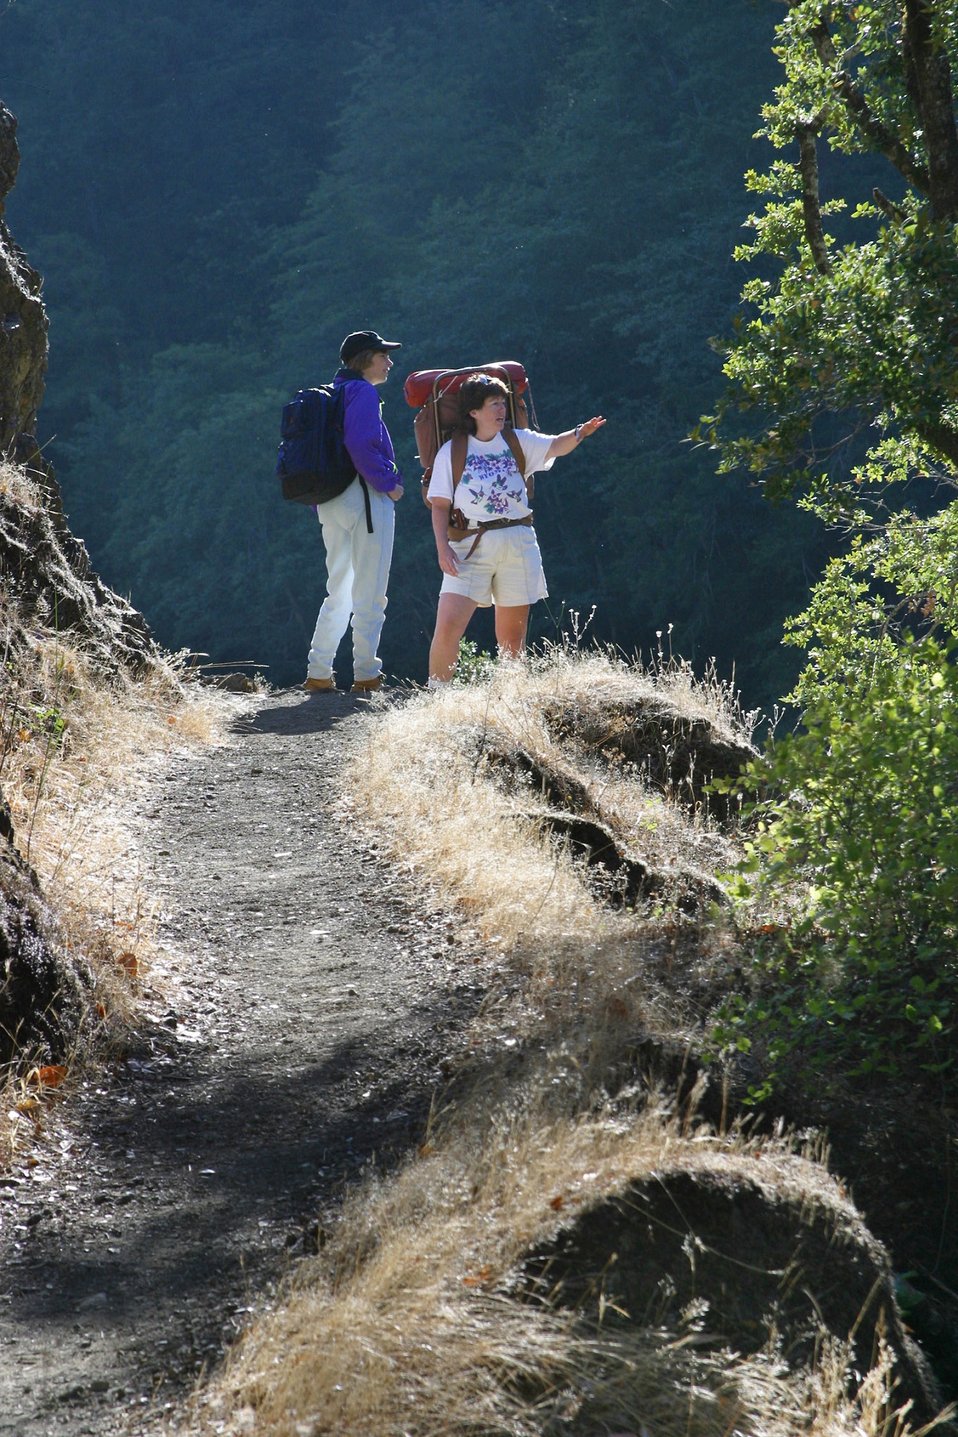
Hiking the Rogue River Trail between Mule Creek and Blossom Rapids.